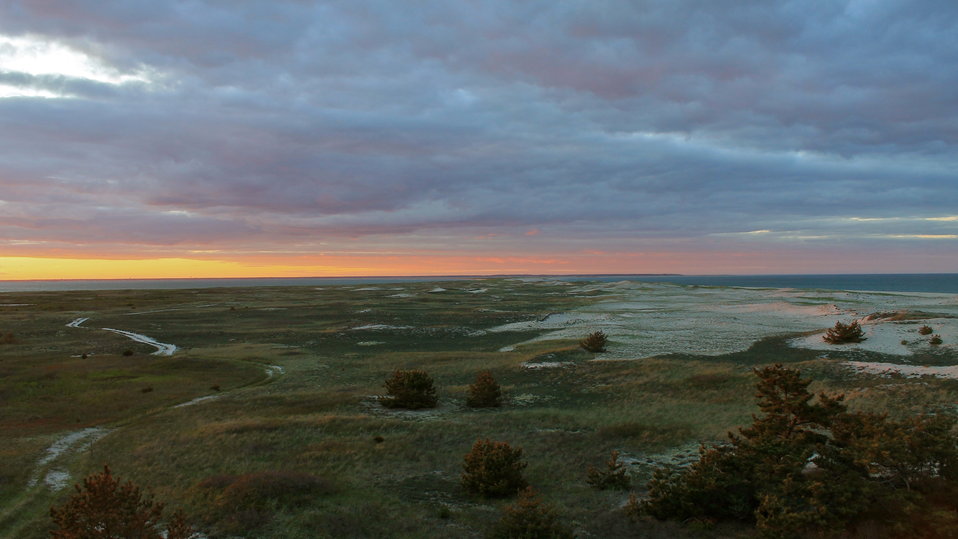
View from top of Monomoy Lighthouse

Monomoy National Wildlife Refuge, MA.